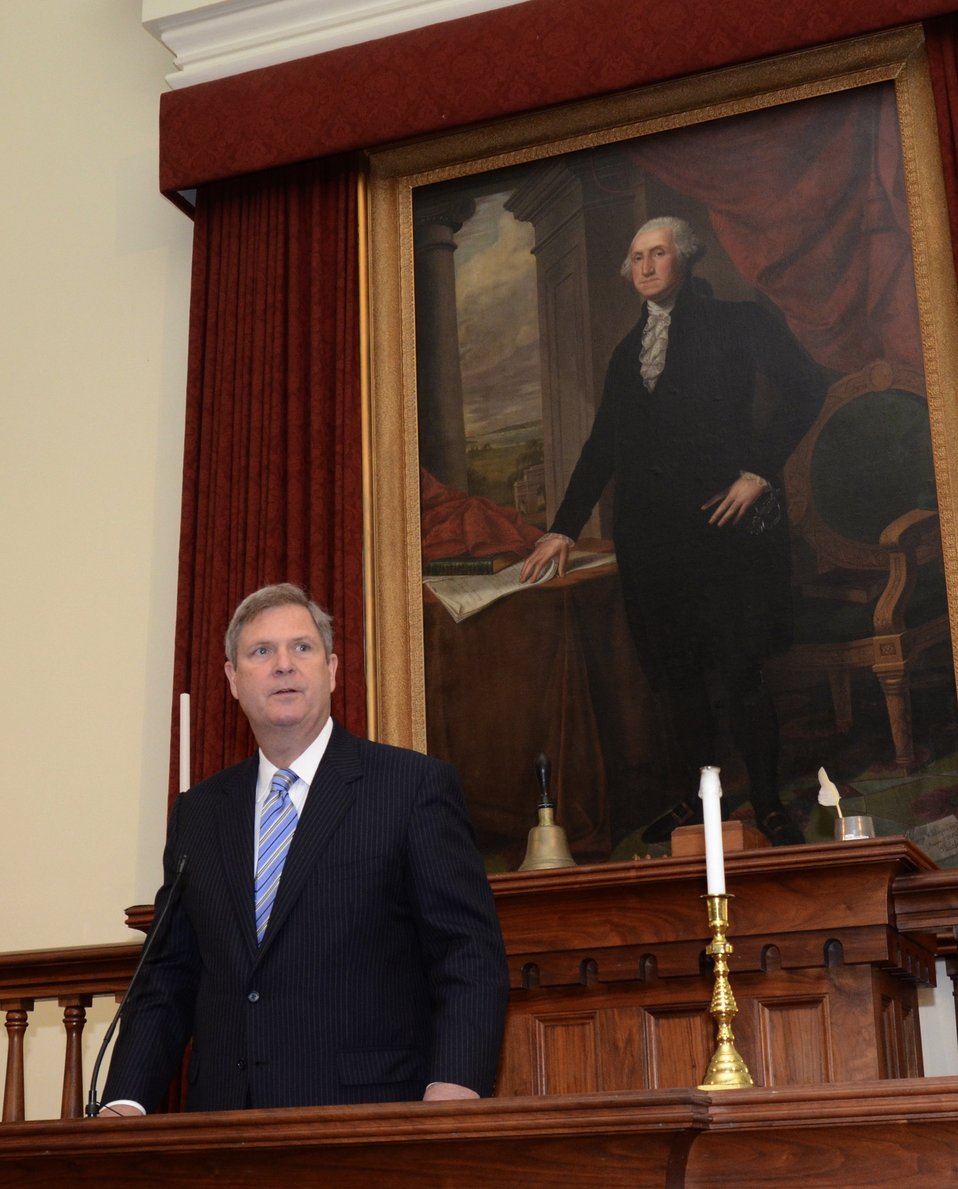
Agriculture Secretary Tom Vilsack speaking at the Old State Capitol in Springfield, IL, to commerorate the 150th Anniversary of the creation of the U.S. Department of Agriculture on Wednesday, November 2, 2011.